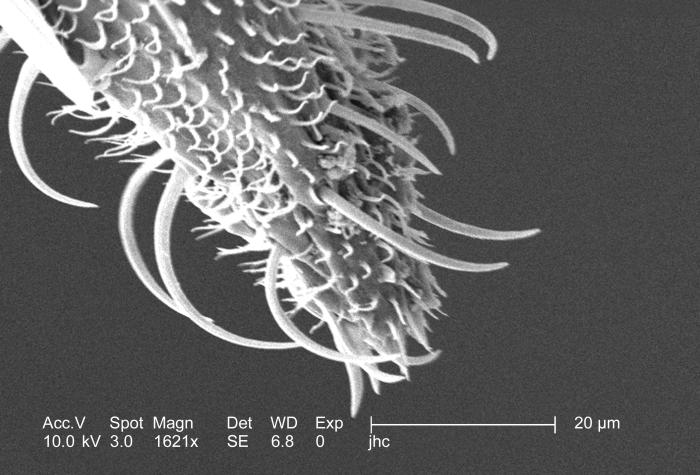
At a higher magnification of 1621x, this scanning electron micrograph (SEM) ) revealed the ornately festooned tip of an Anopheles gambiae mosquito's proboscis. Seen in the field of view is actually the sheath that covered the pair of the needle-sharp "stylets", which together are known as the "fascicle". The larger of the two stylets, known as the "labrum", when viewed in cross-section takes on the shape of an inverted "V", and acts as a gutter, which directs the ingested host blood towards the insect's mouth. The hair-like structures are known as "setae", and are really extensions of the insect's exoskeletal, chitinous covering. These setae act as sensory organs, transmitting impulses indicating changes in the organism's environment.